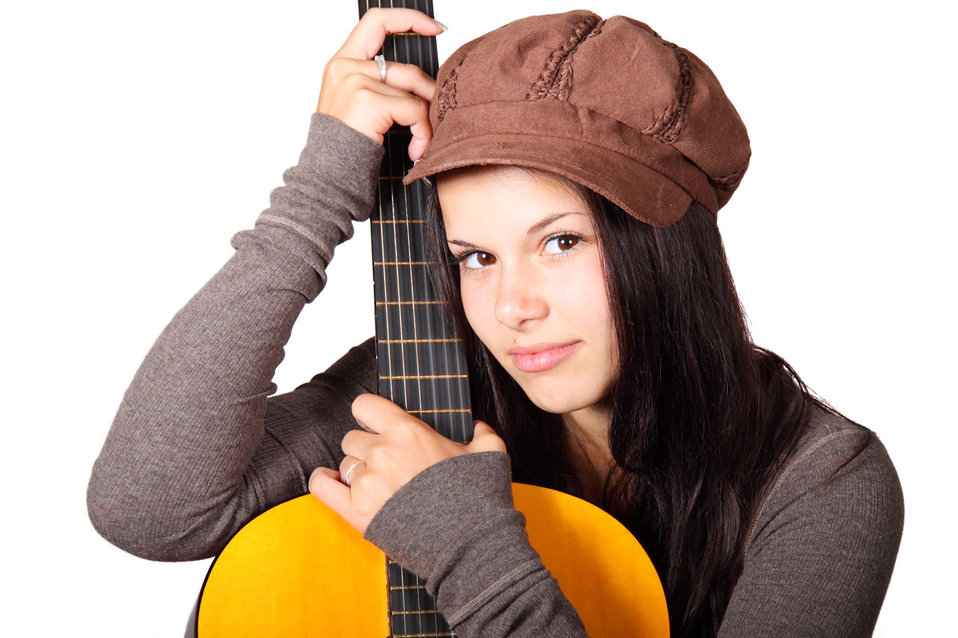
Woman holding guitar

Young woman holding acoustic guitar.